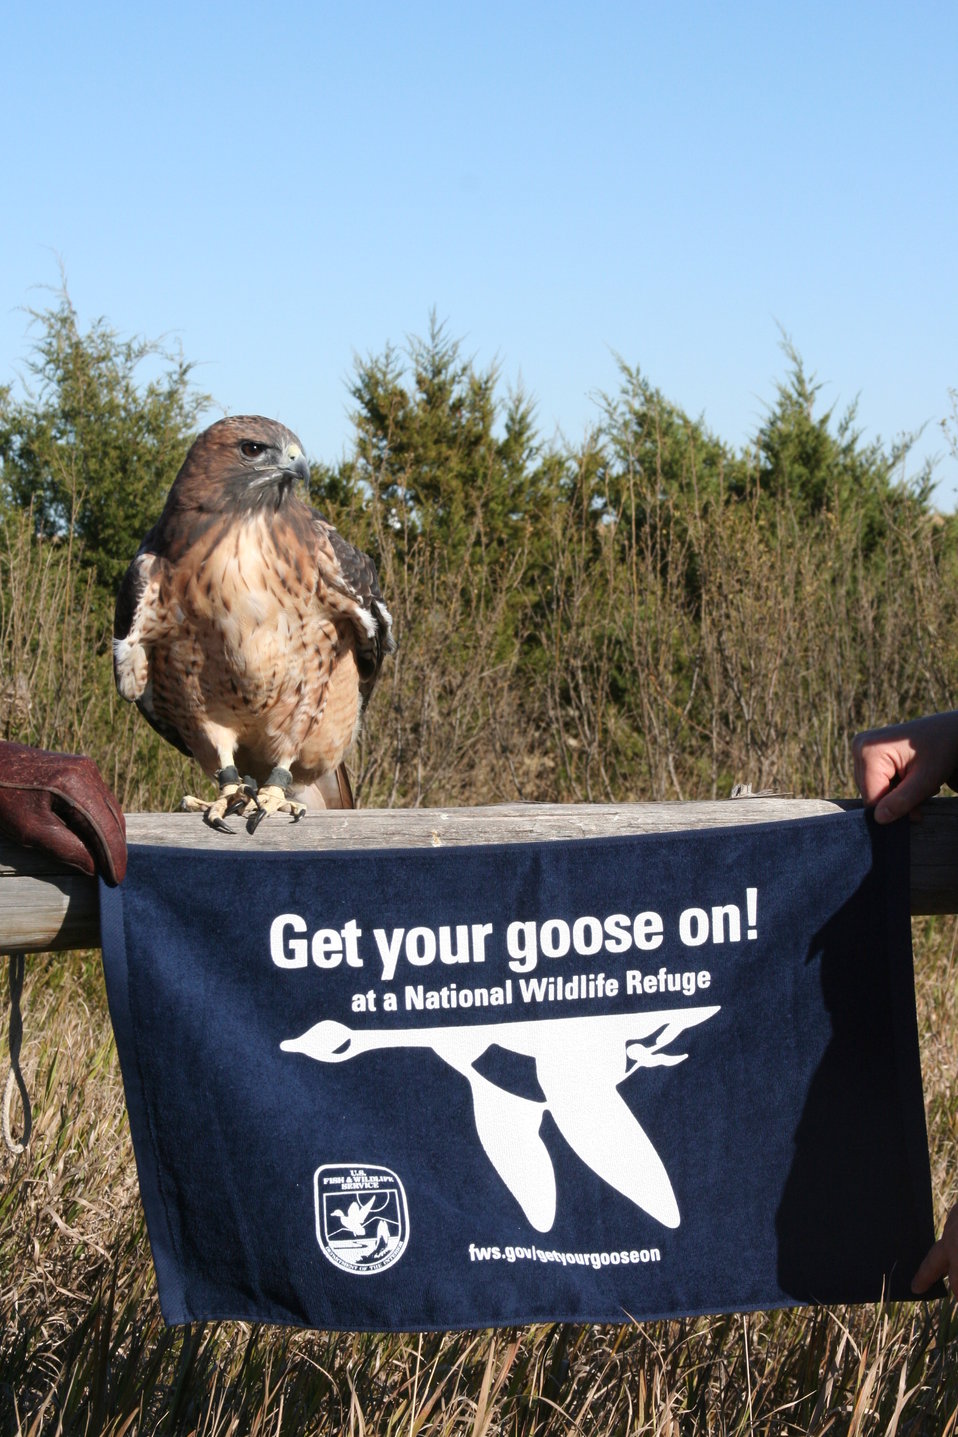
Get Your Goose On! - Raptor Style!

During Huron Wetland Management District's 2012 Prairie Festival, visitors were treated to an up close and personal look at various birds of prey.